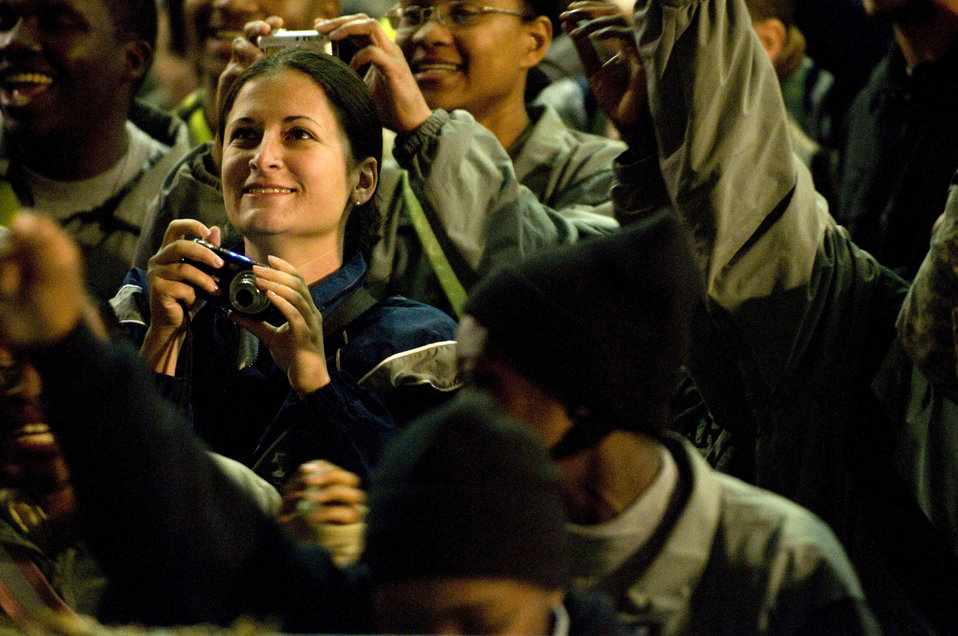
Around the world in 8 days

Airmen and Soldiers cheer and take photos during the USO Tour entitled